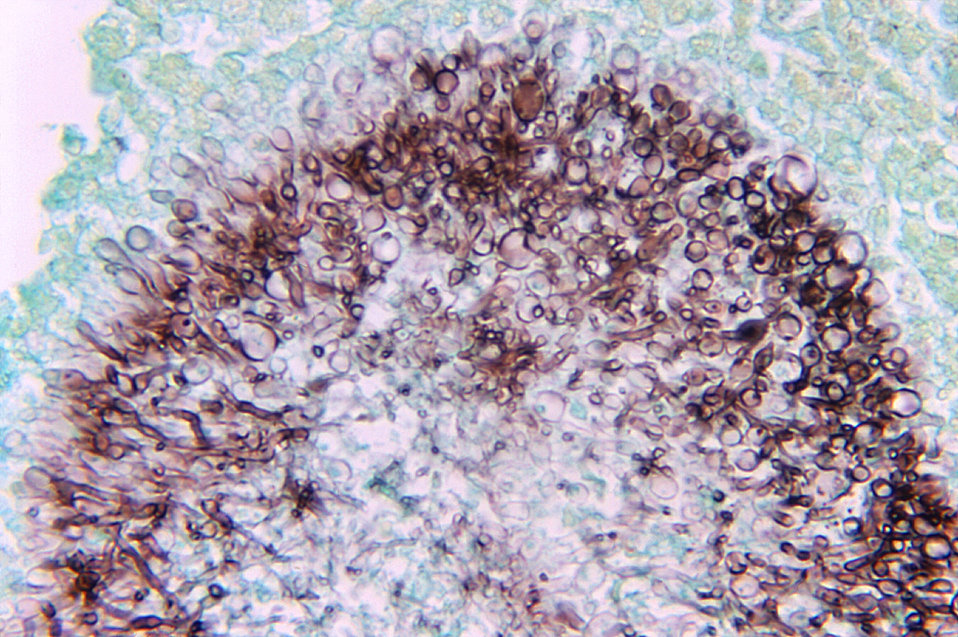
Magnified 562X, this photomicrograph of a human lung tissue specimen, which had been stained using fluorescein-labeled A. boydii antiglobulin, revealed the presence of the fungus Pseudallescheria boydii, formerly known as Allescheria boydii.